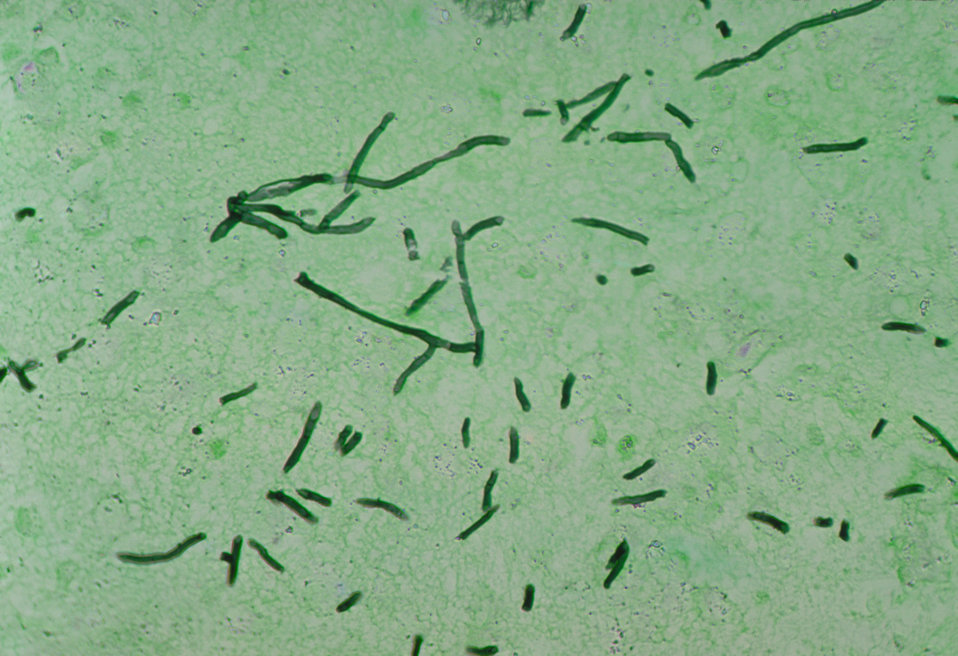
A micrograph of a pigeon brain using methenamine silver stain, revealing the presence of the fungus Ochroconis gallopavum, formerly Dactylaria gallopava.